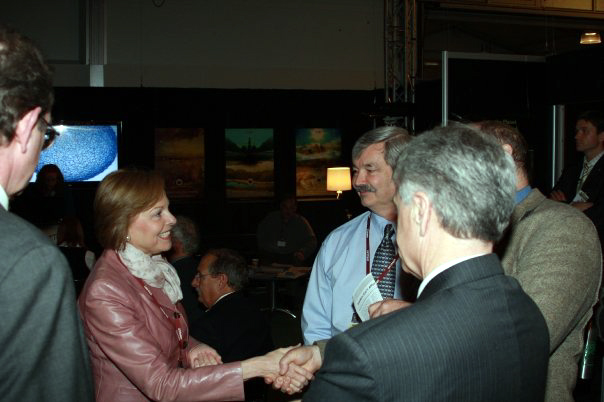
U.S. Ambassador to Denmark Laurie Fulton at the U.S. Center at COP15, Bella Center, Copenhagen, Denmark on December 11, 2009.